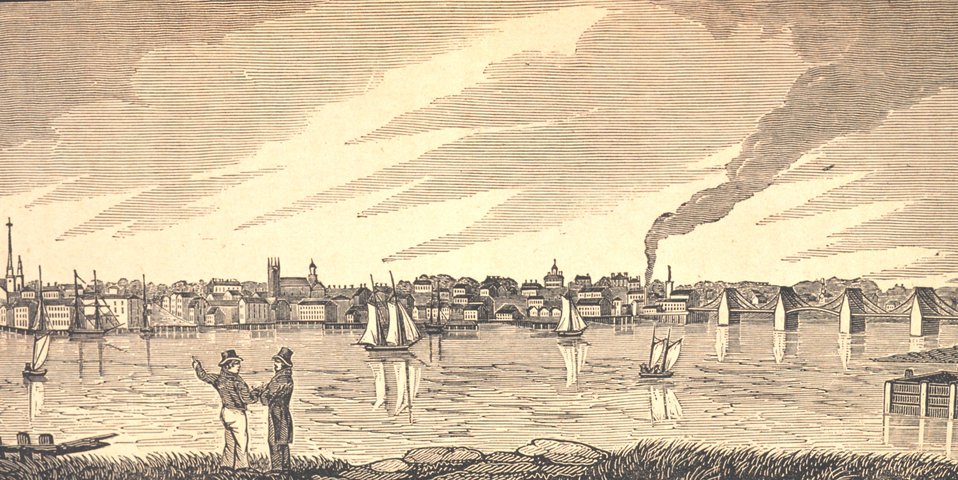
Newburyport as seen from the northern bank of the Merrimac River. The bridge to the right is a chain suspension bridge. In: Historical Collections ... of Every Town in Massachusetts. 1841.